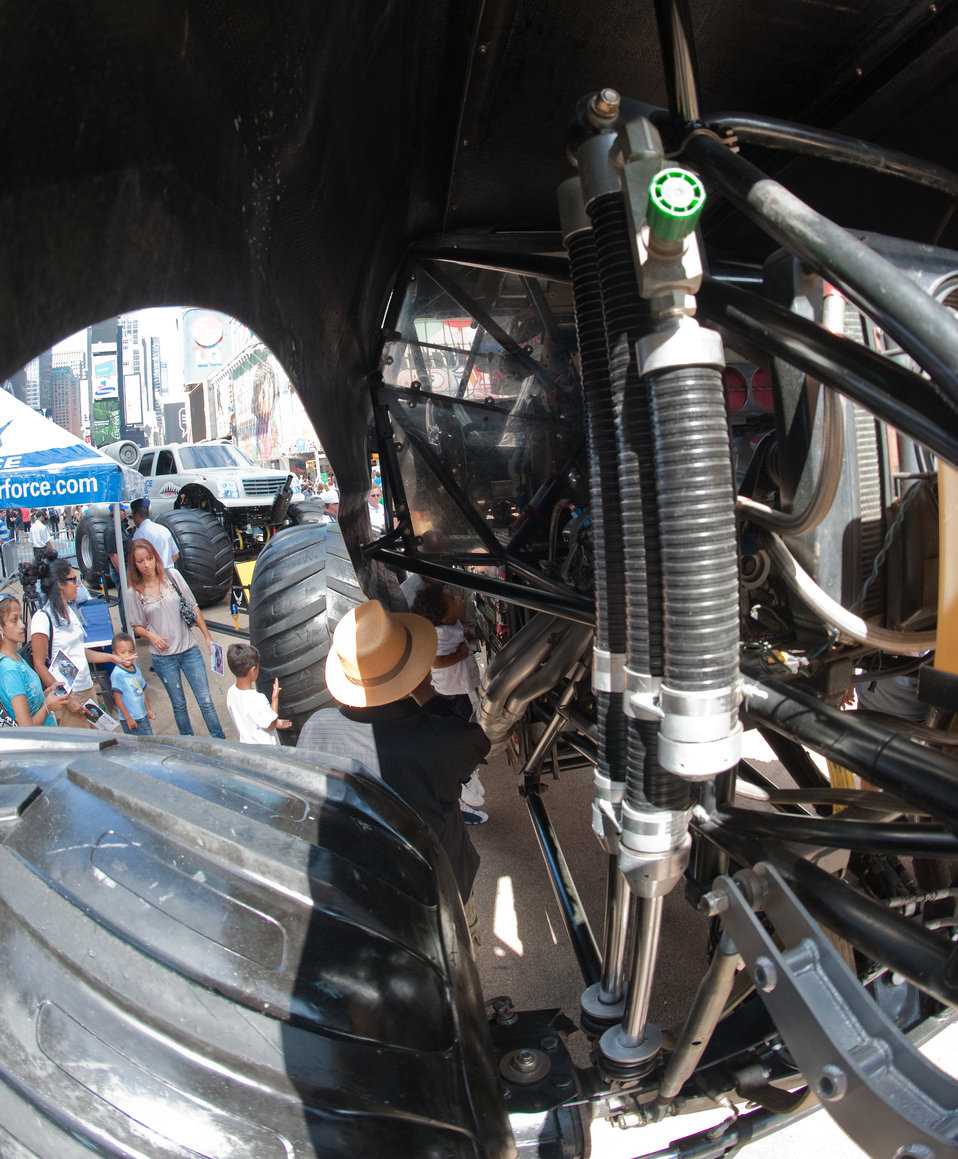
Air Force Week Now Showing in Times Square

Marcus Rice lifts his son Devan into the Air Force Monster Truck Afterburner for a close look at the driver's compartment Aug. 26, 2010, during Air Force Week New York City in Times Square.